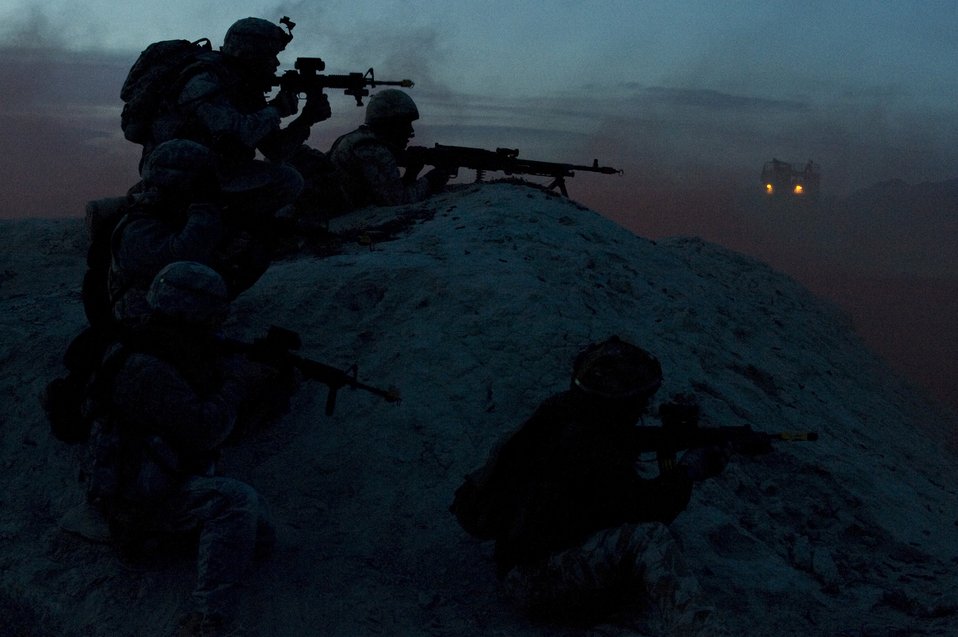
Aim high

A group of U.S. Air Force and British airmen take aim at an 'enemy' position from outside a mock Iraqi village March 16, 2011, during a Desert Eagle exercise at the Nevada Test and Training Range.